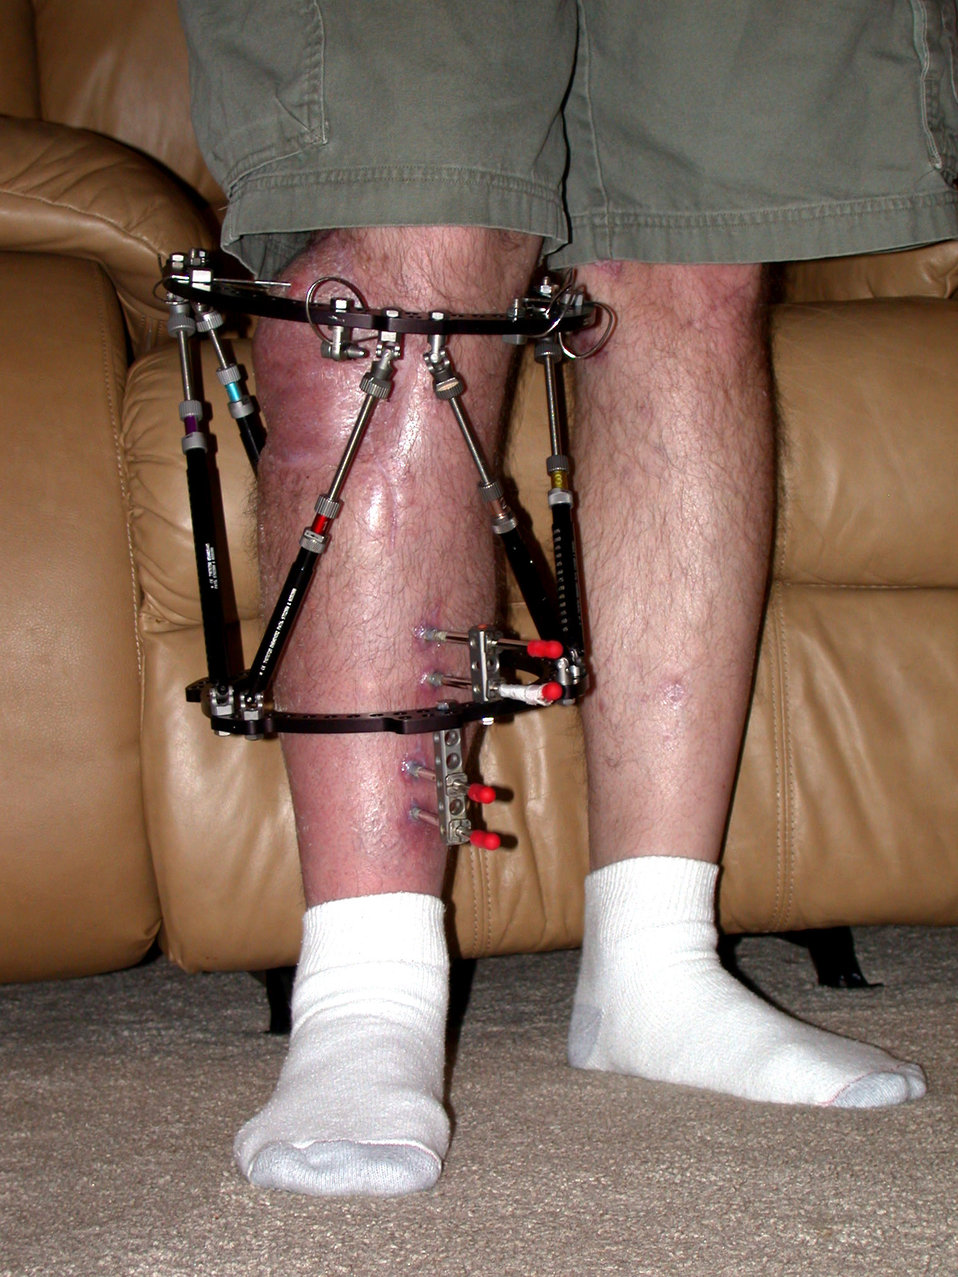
Mine explosion puts two Airmen on different paths to recovery

Maj. Matthew Conlan?s leg was swollen to almost twice its normal size after he was injured in a land mine explosion. The Taylor Spatial Frame was as painful as it looked, but it helped the bones in his legs heal correctly.